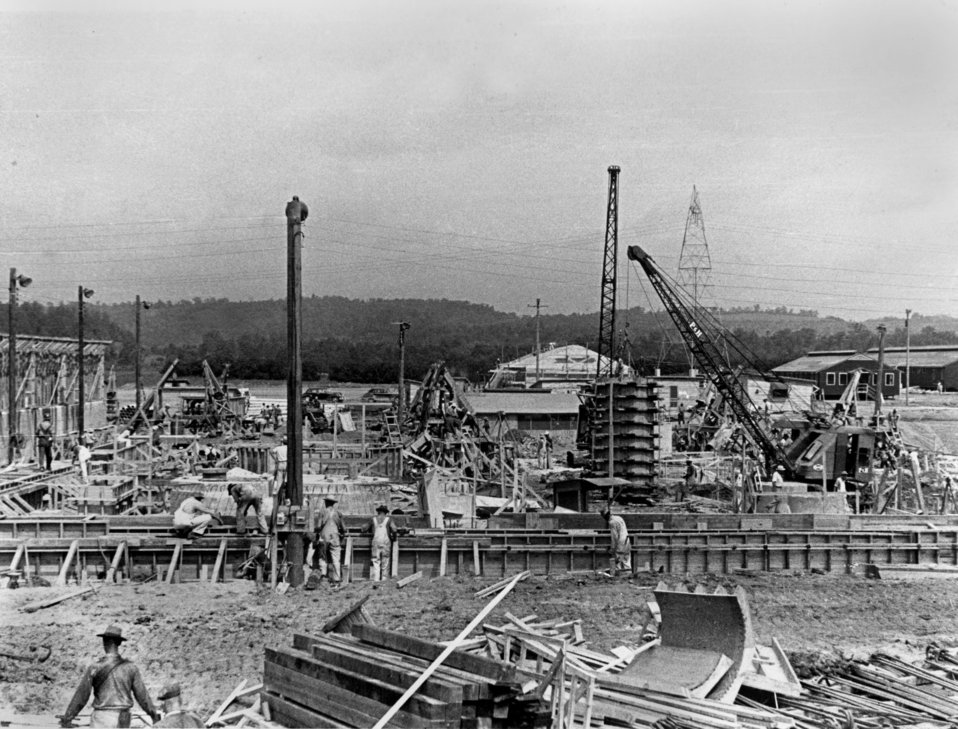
Early Construction K-25 Oak Ridge

roll60-23 DOE photo Ed Westcott Oak Ridge, Tennessee 8-4-1943